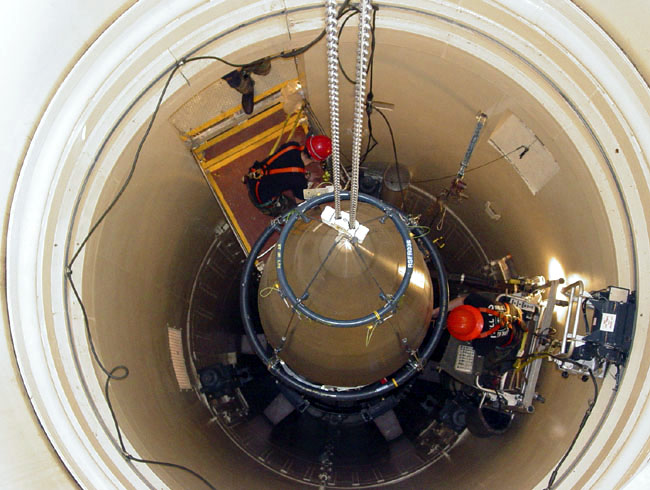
Missile maintenance

MALMSTROM AIR FORCE BASE, Mont. -- A Malmstrom missile maintenance team removes the upper section of an ICBM at a Montana missile site. The section was picked at random for a